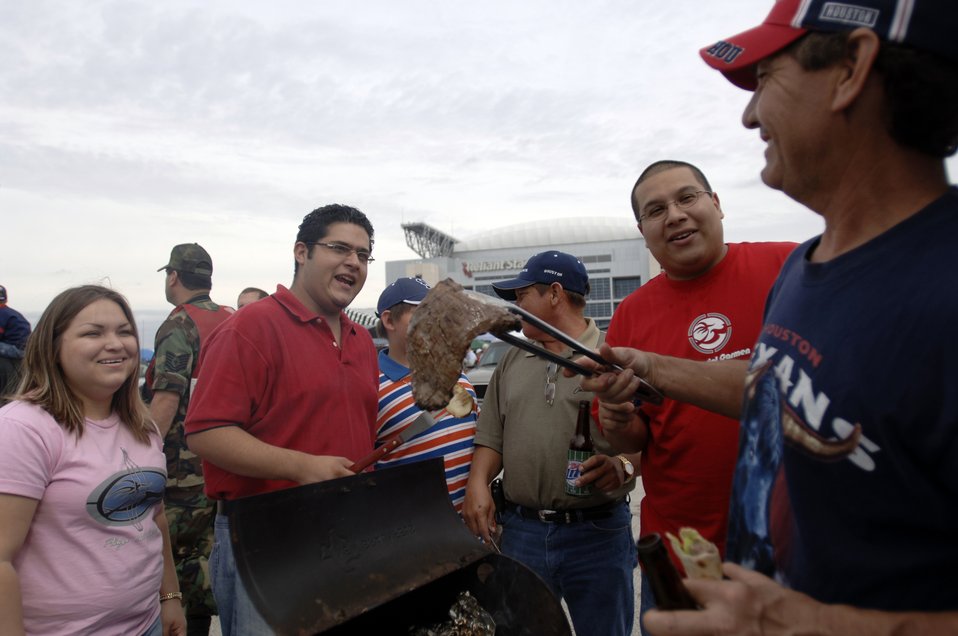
The Texans honored military servicemembers in their Salute to the Military day

Houston Texans fans Flor Cruz, Joe Sanchez, Jaudiny Cuellar and Dr. Beto Esquibel barbecue some ribeye steaks during their tailgate party in the parking lot of Reliant Stadium in Houston Sept. 24. The game between the Houston Texans and Washington Redskins was designated as the Houston Texan's Salute to the Military day by team officials.